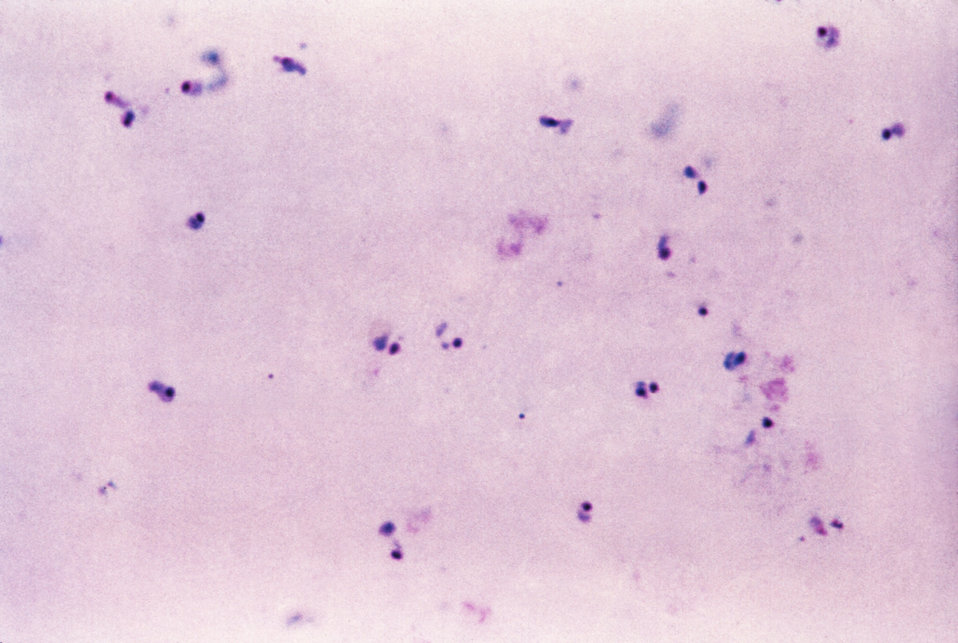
This thick film Giemsa stained micrograph reveals a number of ring-form Plasmodium falciparum trophozoites.